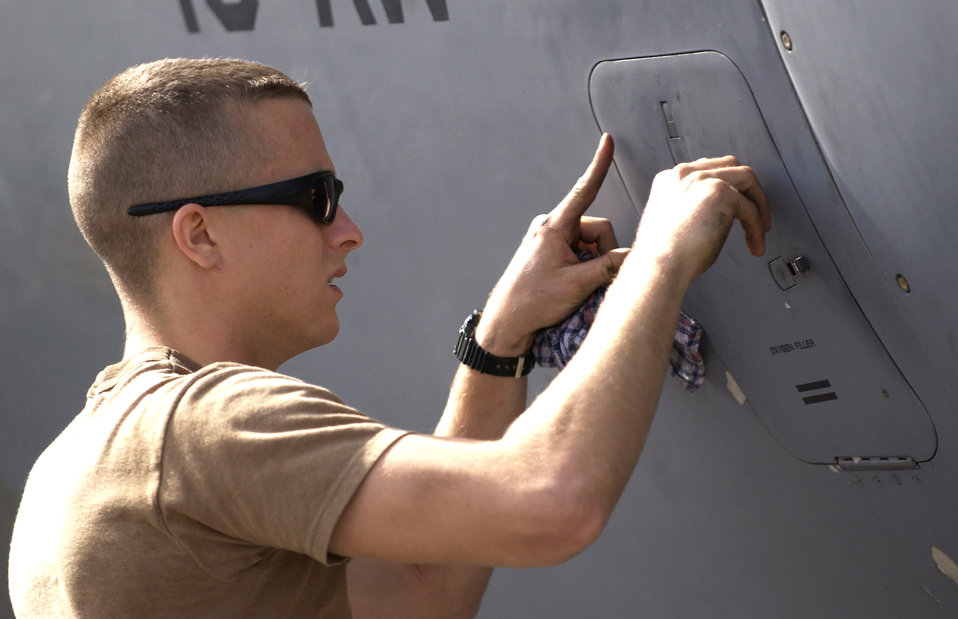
Hercules inspections

SOUTHWEST ASIA -- Airman 1st Class Matthew Medley conducts an inspection of his C-130 Hercules at a forward deployed location Dec. 2. The C-130s are supporting both operations Iraqi Freedom and Enduring Freedom. Airman Medley is a crew chief assigned to the 379th Air Expeditionary Wing.